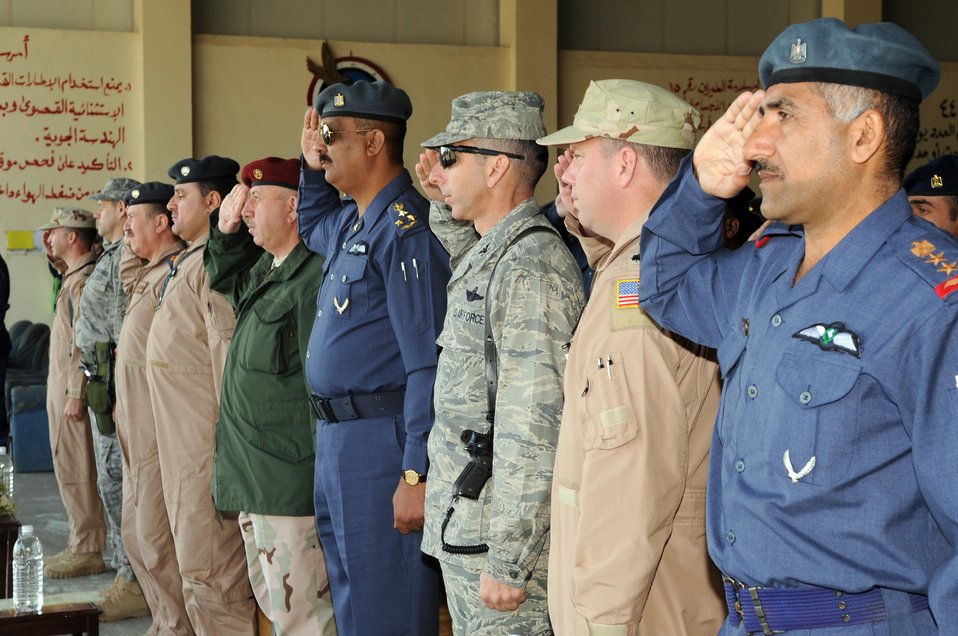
Laughlin pilot helps launch Iraqi air force

Leaders from the 521st Air Expeditionary Advisory Squadron, 321st Air Expeditionary Advisory Group and Iraqi air force Squadrons 1 and 3 salute both countries' national anthems Jan. 11, 2010, at Kirkuk Air Base, Iraq.